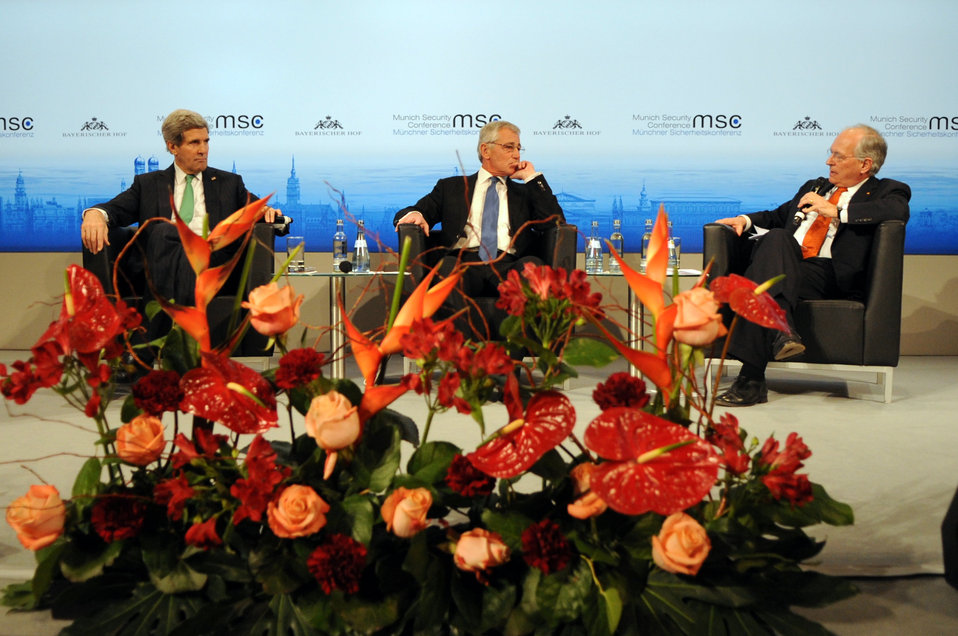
Secretaries Kerry, Hagel Participate in a Joint Panel Discussion

Former German Ambassador to the United Kingdom Wolfgang Ischiner, now chairman of the Munich Security Conference, asks questions of U.S. Secretary of State John Kerry and U.S. Secretary of Defense Chuck Hagel during a joint panel discussion on 'A Transatlantic Renaissance' in Munich, Germany, on February 1, 2014.